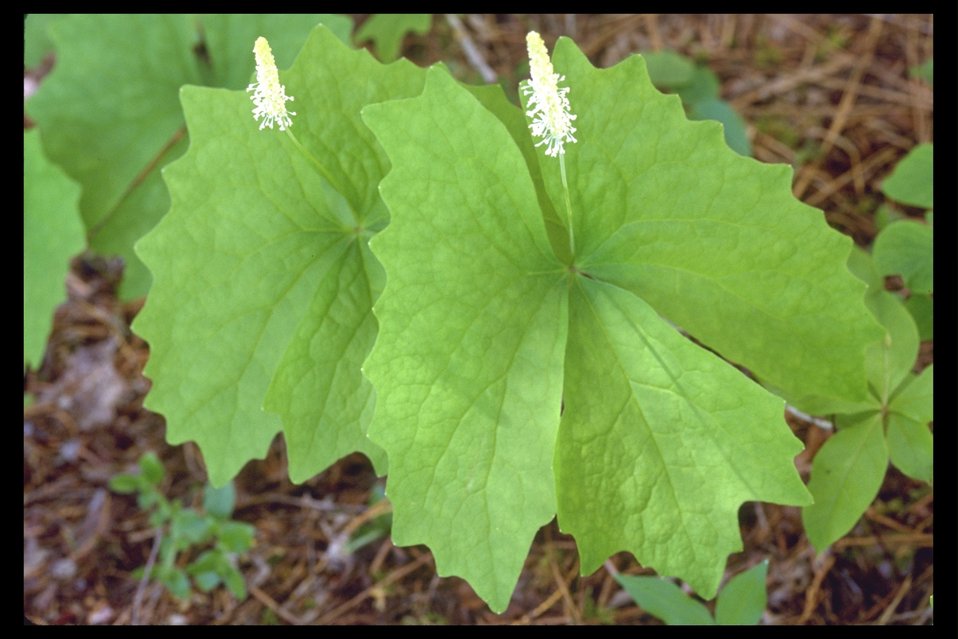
Vanilla Leaf (Achlys triphylla) along East Evans Creek.